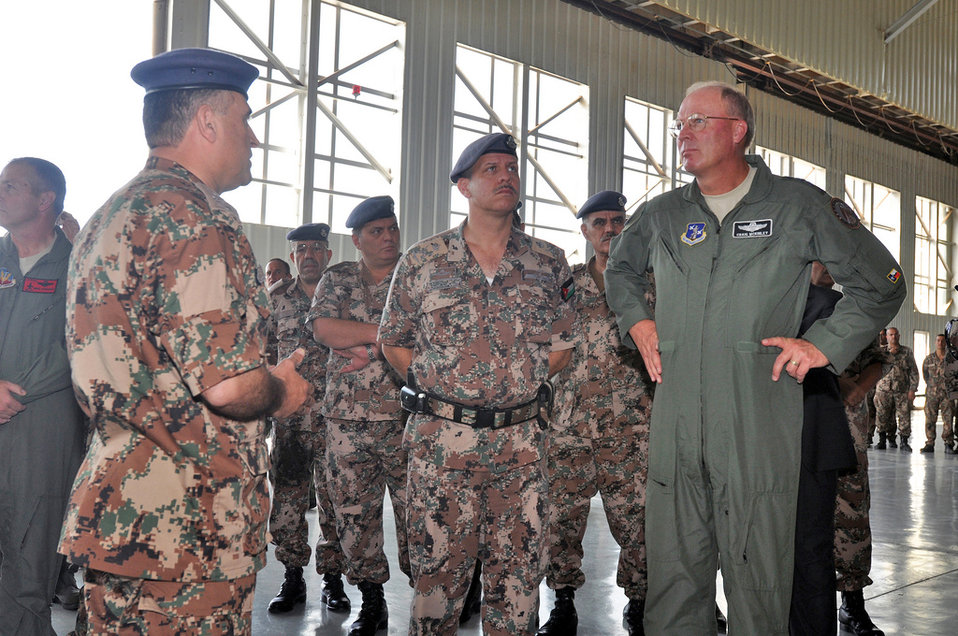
Falcon Air Meet

His Royal Highness Prince Feisal Ibn Al-Hussein (center) and Gen. Craig McKinley, the chief of the National Guard Bureau, right, visit an aircraft maintenance facility at Mwaffaq Salti Air Base, Azraq, Jordan, on Oct. 28, 2009. Jordan is partnered with Colorado in the National Guard's State Partnership Program.